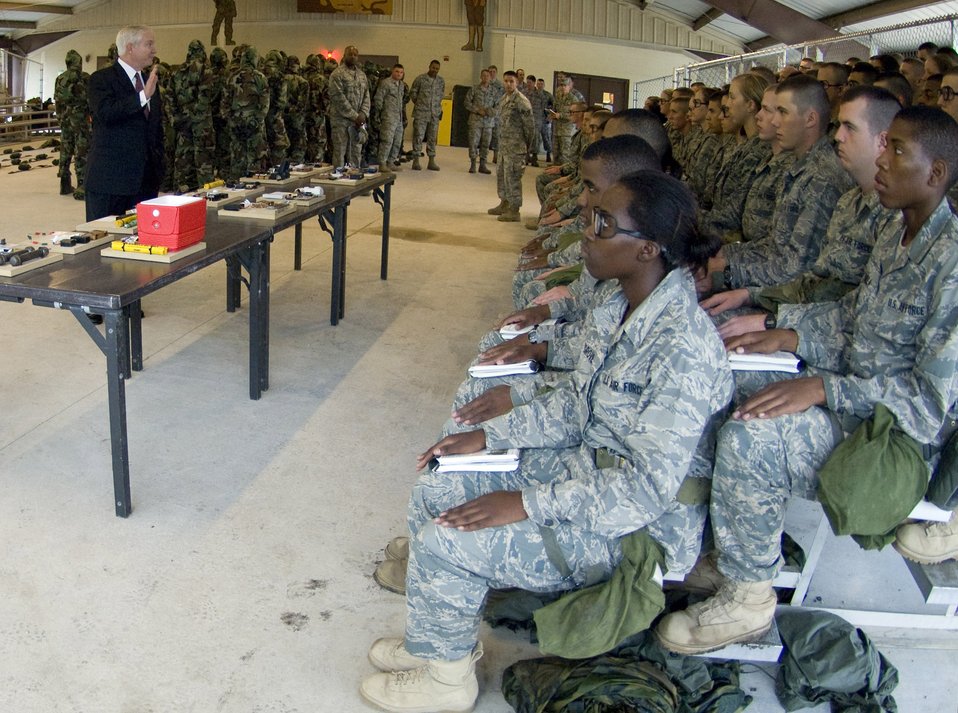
SECDEF visits Airmen, tour BMT facilities

Secretary of Defense Robert M. Gates thanks basic trainees for serving their country during a visit to Lackland Air Force Base, Texas, July 24.